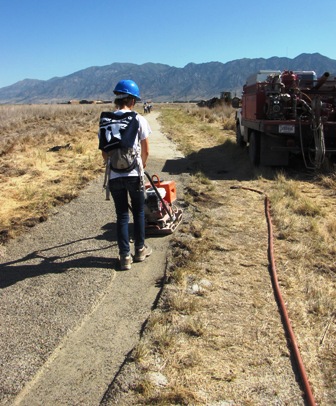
Trail Building

Youth Conservation Corps members help build a trail at Utah's Bear River Migratory Bird Refuge.